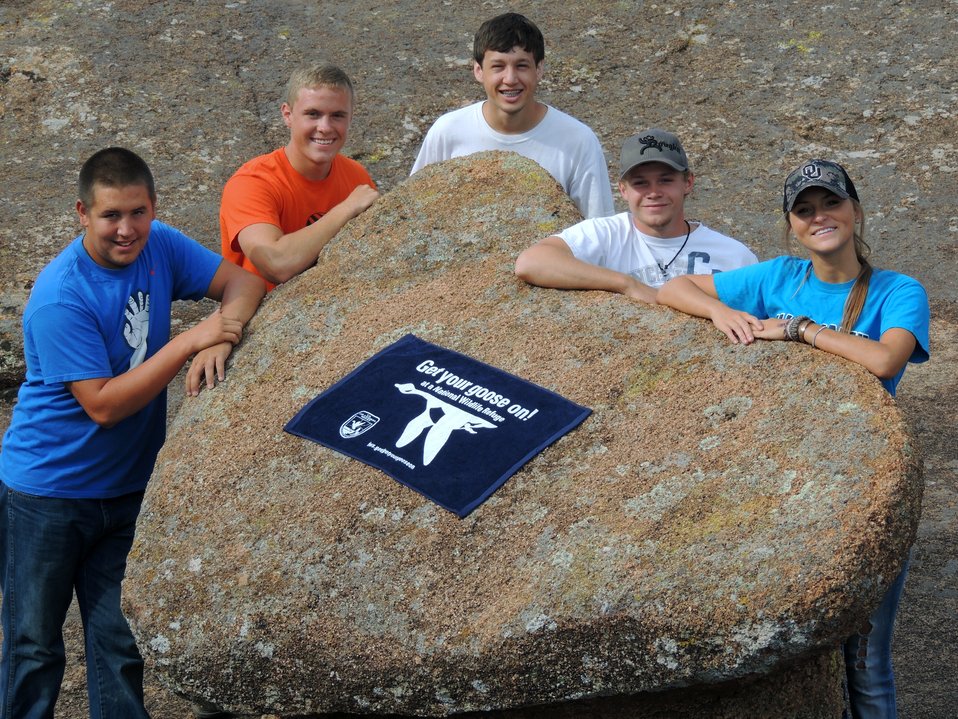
Get Your Goose On!

Wichita Mountains National Wildlife Refuge in Oklahoma.